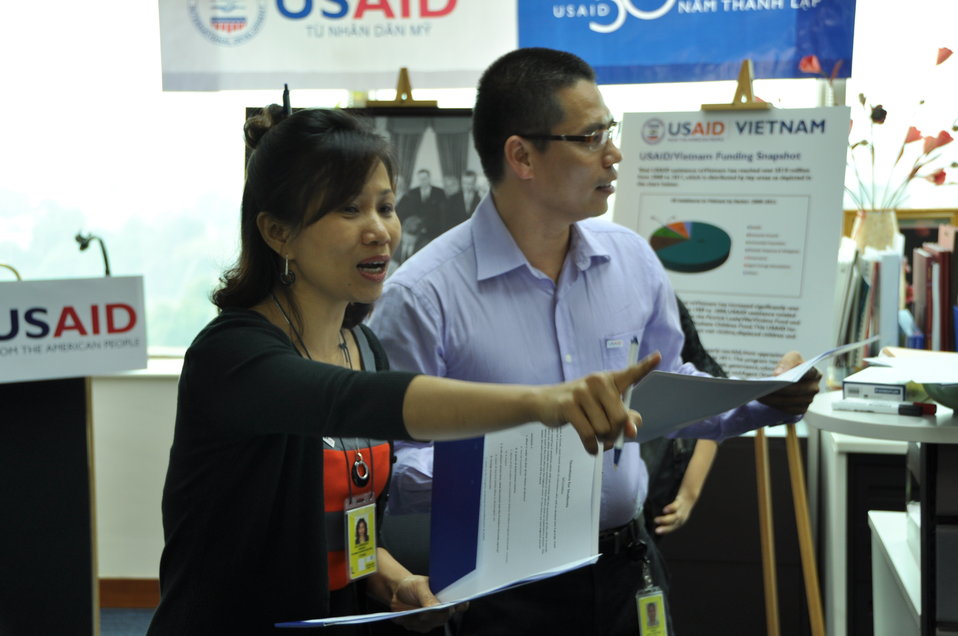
USAID Vietnam Open House 50th Anniversary, Hanoi